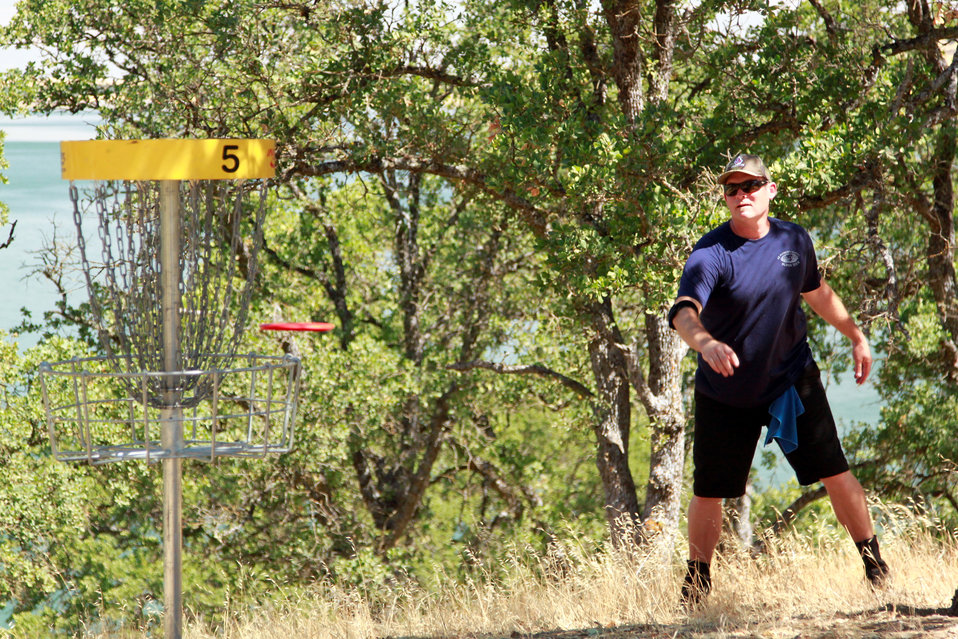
Corps' Black Butte Lake hosts disc-golf charity event

A participant shoots for the fifth hole during this year's charity disc golf tournament at the Corps' Black Butte Lake July 1, 2012. More than $4,000 dollars was raised for the Glenn Medical Foundation this past weekend as 77 disc golfers from throughout California traveled to Black Butte Lake for the third annual Banging Chains for Charity disc golf tournament. (U.S. Army photo Seth Jantzen/Released)